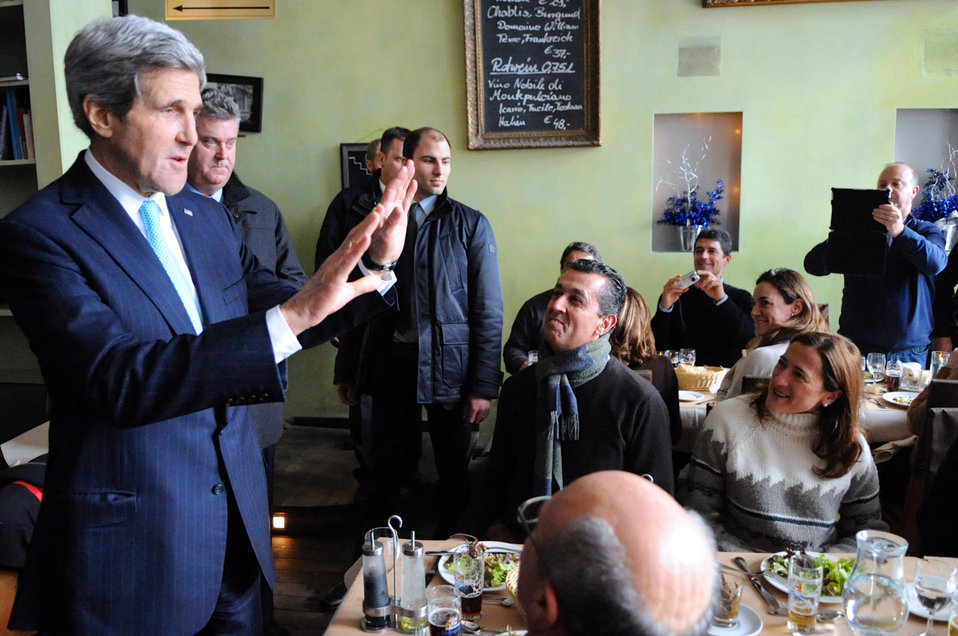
Secretary Kerry Greets Spanish Tourists After a Stop at a Berlin Restaurant

U.S. Secretary of State John Kerry greets a group of Spanish tourists having lunch in a restaurant in the shadow of the Brandenburg Gate while making an impromptu stop in Berlin, Germany, before a meeting with Chancellor Angela Merkel on January 31, 2014.